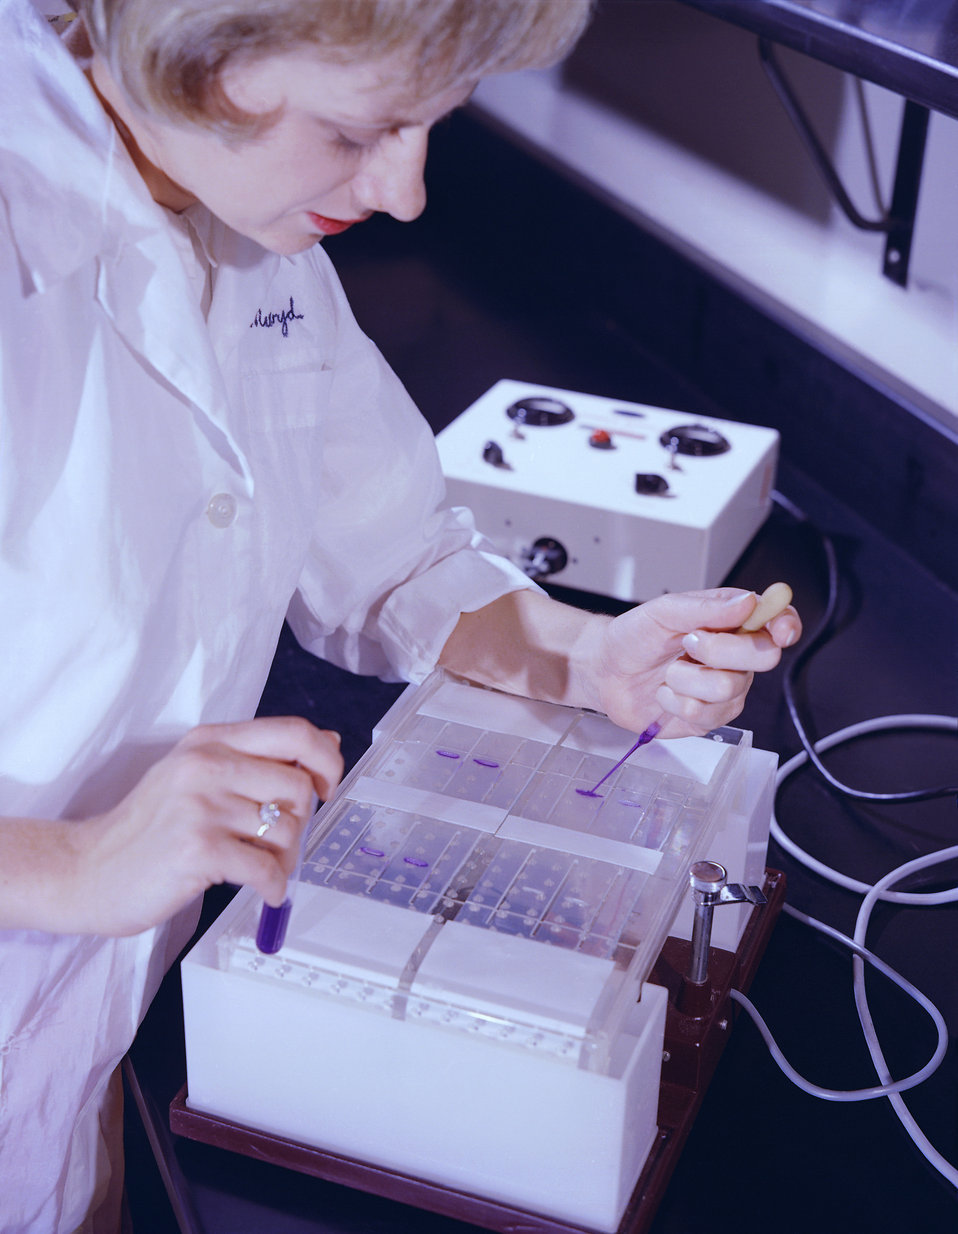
This historic 1963 photograph depicted laboratorian, Shirin Floyd, as she was preparing to perform an immunoelectrophoresis study.